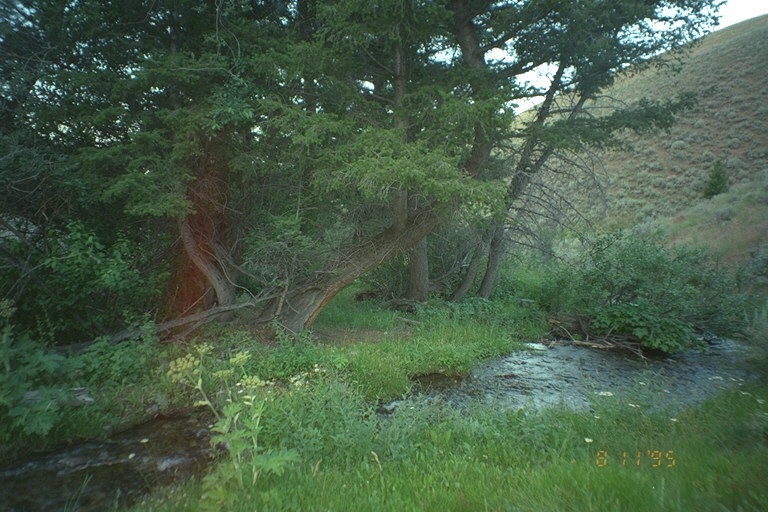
Riparian area Public Lands Salmon Field Office UCSC Upper Columbia Salmon Clearwater District